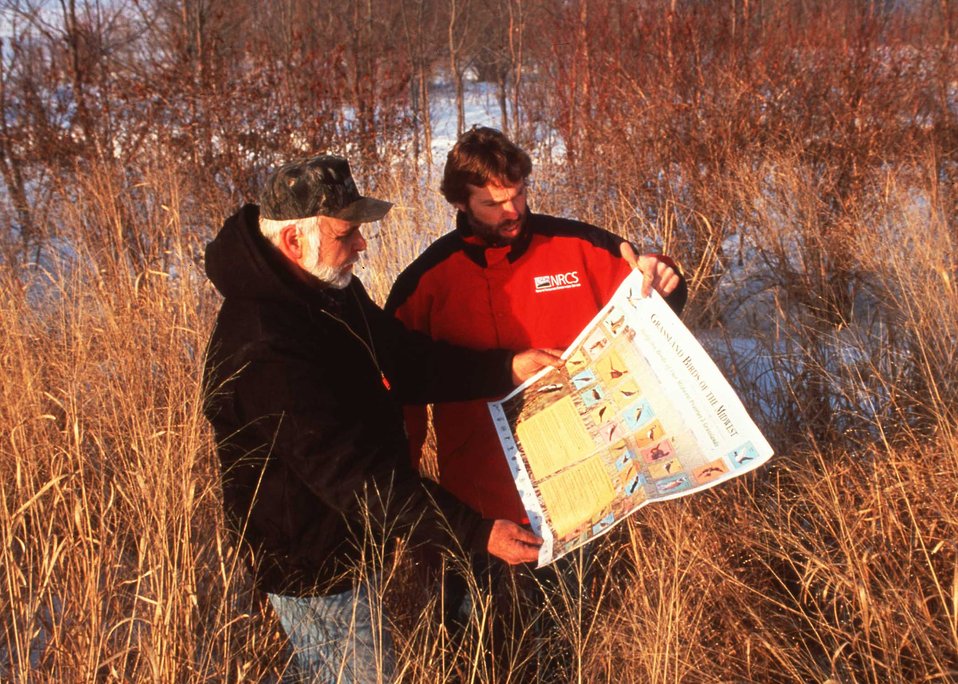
Native grasses are part of a buffer system along Bear Creek in Story County in central Iowa. They aid wildlife and the environment.